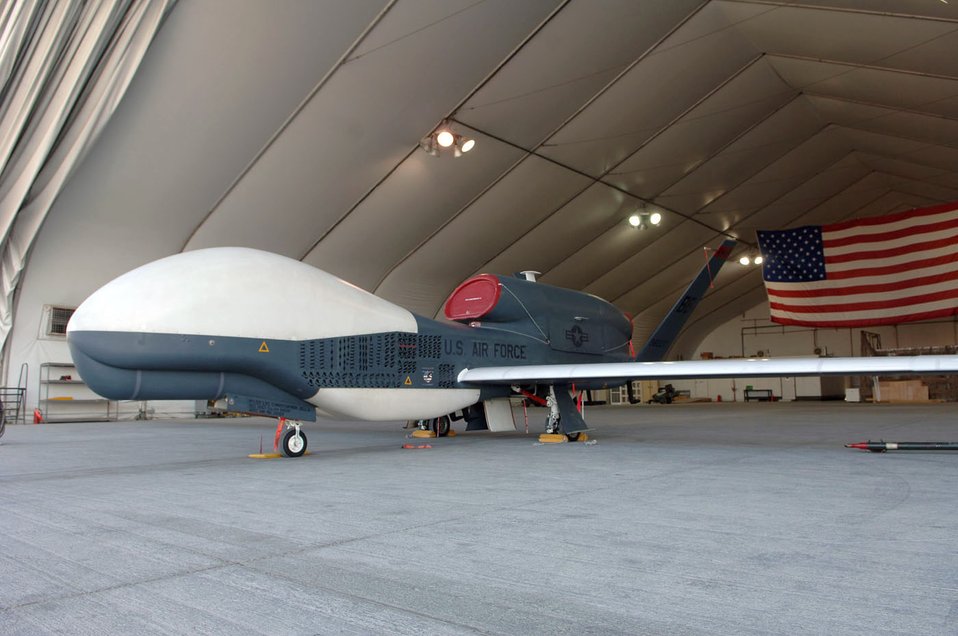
Global Hawk

SOUTHWEST ASIA (AFPN) -- Prototype Global Hawk Air Vehicle No. 3 sits ready in its hangar before a voyage halfway around the world to Edwards Air Force Base, Calif. During its four years with the 12th Expeditionary Reconnaissance Squadron the prototype flew nearly 4,250 combat hours in support of the global war on terrorism.